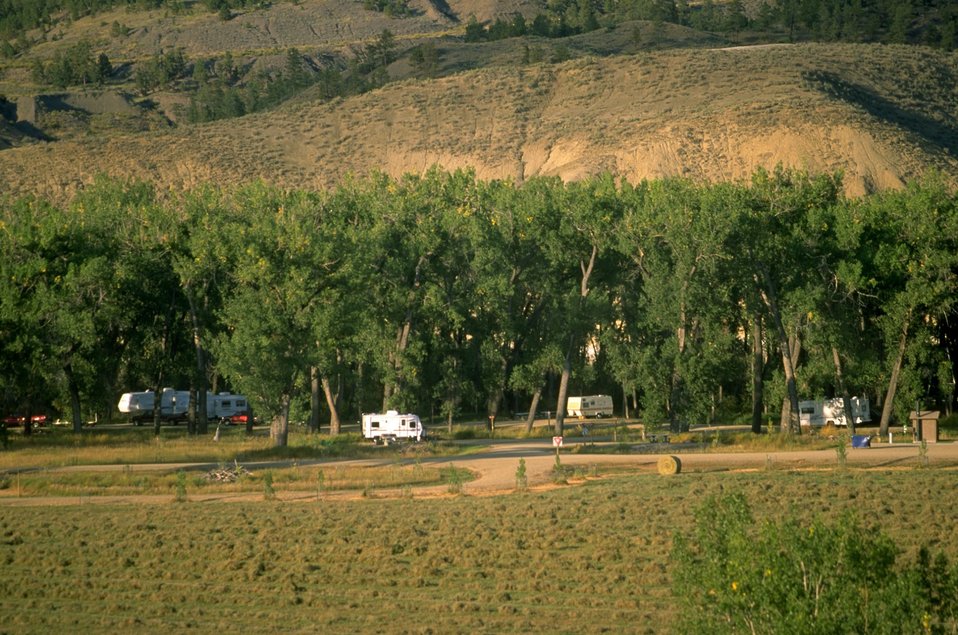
Kipp Recreation Area